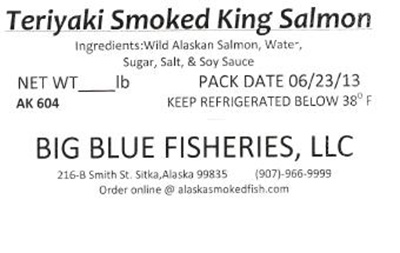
RECALLED – Salmon, Cod

September 30, 2013 – Product Recall – Big Blue Fisheries, Llc Recalls All Smoked Products From All Lots, Various Sizes, in Vacuum Packaging Because of Possible Health Risk.